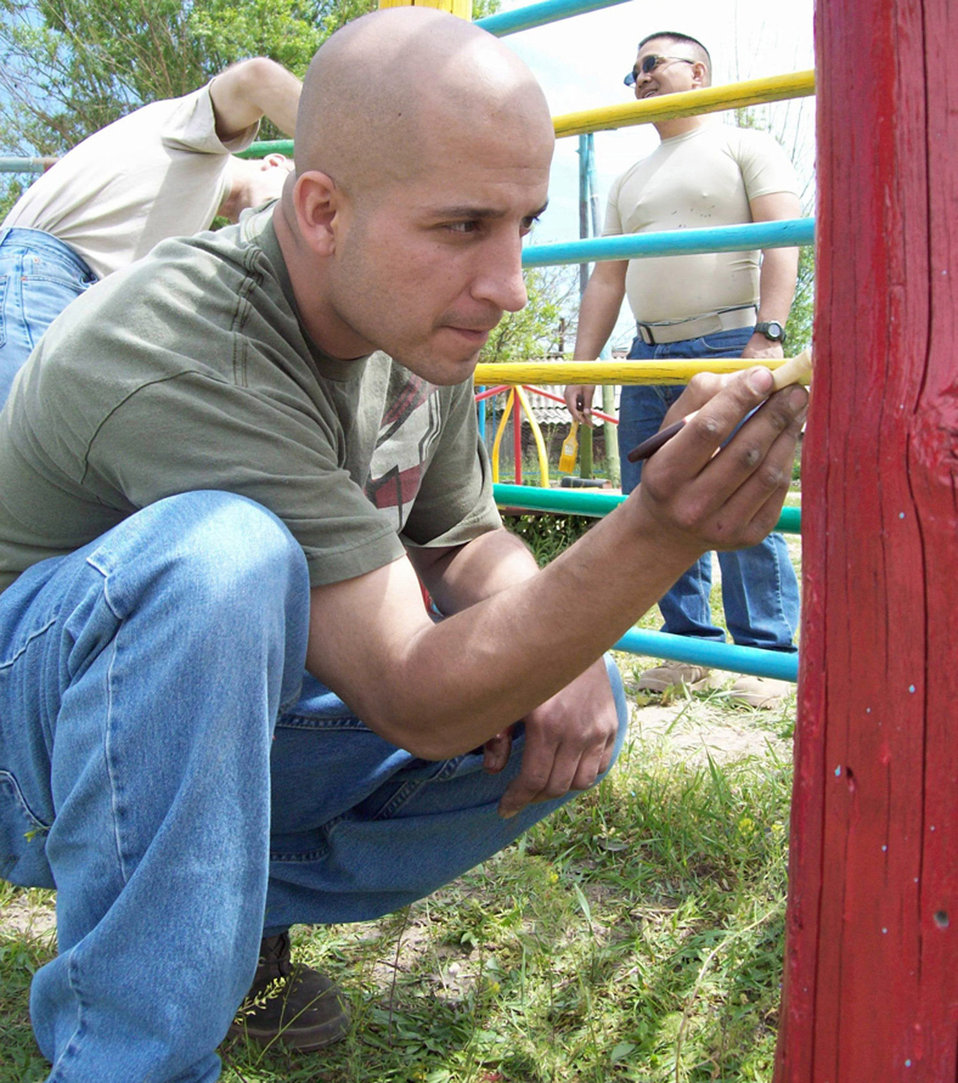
Airmen take heed for those in need

Staff Sgt. Robert Forbes paints a column on a piece of playground equipment at the Umut-Nadjeshda Children's Rehabilitation Center May 9 in Bishkek, Kyrgyzstan. A group of Airmen visited the center in their off-duty time to help install a stove and improve the children's playground. Sergeant Forbes is a vehicle maintenance technician assigned to the 376th Expeditionary Logistics Readiness Squadron at nearby Manas Air Base. He is deployed from Mountain Home Air Force Base, Idaho, and his hometown is Tucson, Ariz.